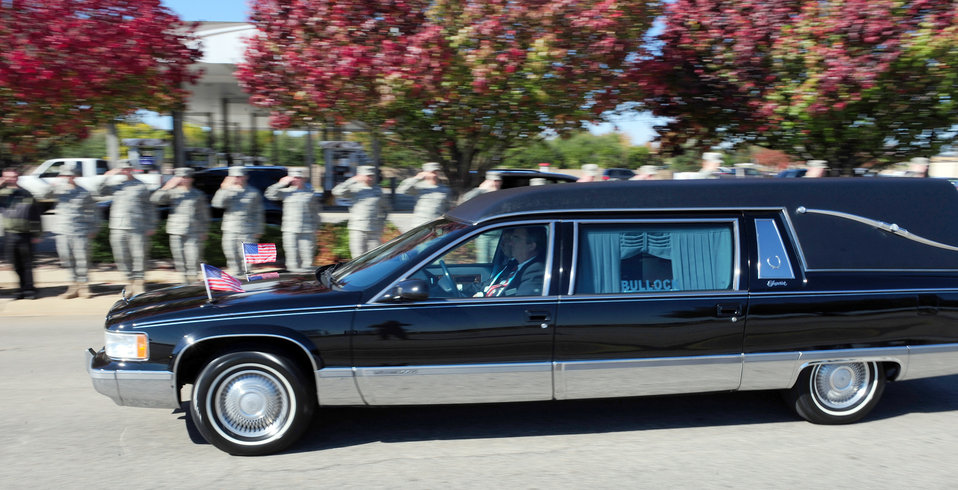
Fallen Airman honored

Thousands of servicemembers lined the streets to pay their last respects to a fallen Airman Nov. 18, 2010, at Shaw Air Force Base, S.C. . Staff Sgt. Andrew Bubacz, a native of Dalzell, S.C., died Nov. 12, 2010, while deployed to Nuristan, Afghanistan on a provincial reconstruction team. Sergeant Bubacz was a 97th Communications Squadron at Altus Air Force Base, Okla.